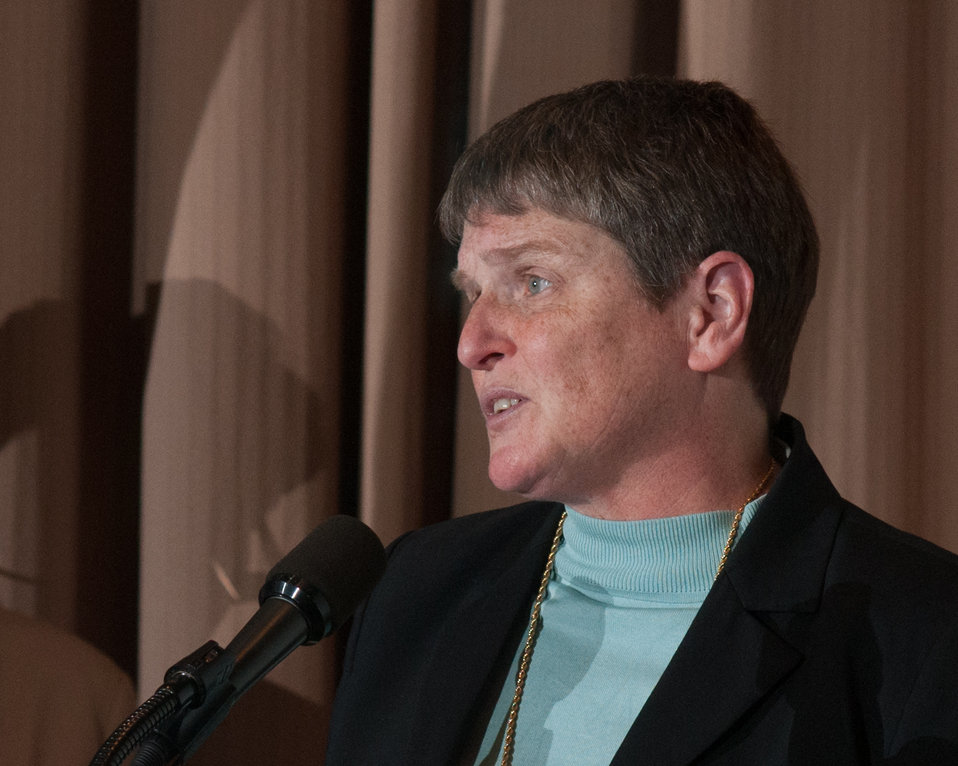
U.S. Department of Agriculture (USDA) DEpartmental Administration Deputy Assistant Secretary Robin Heard leads the Pledge of Allegiance during the 2013 Women’s History Month Observance in the Jefferson Auditorium with an event themed “Women Inspiring Innovation Through Imagination: Celebrating Women in Science, Technology, Engineering, and Mathematics, on Thursday March 21, 2013, in Washington, D.C.